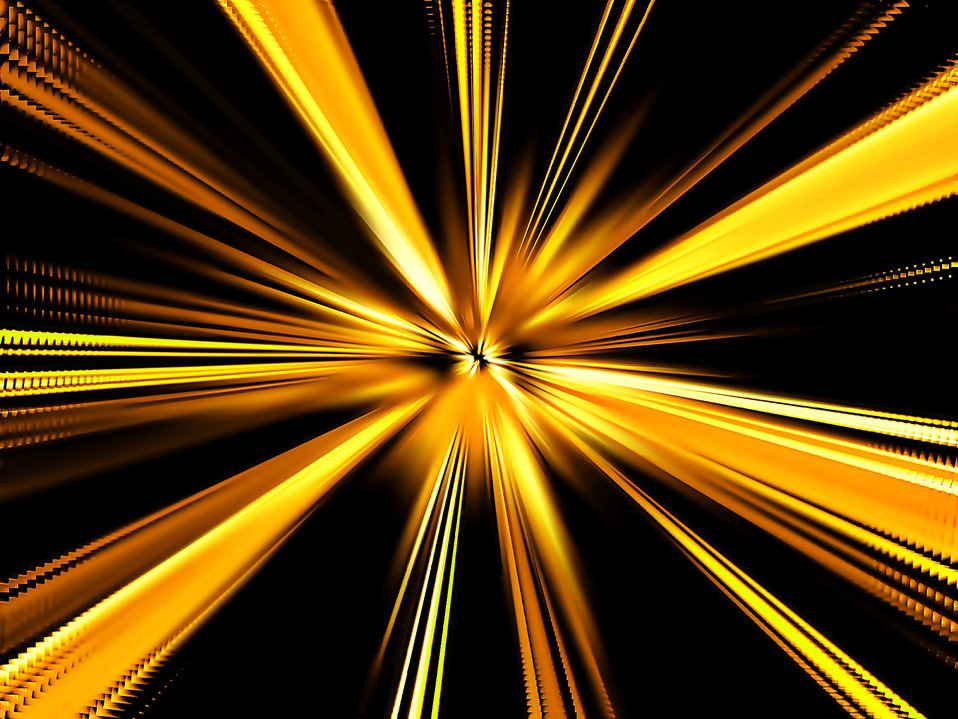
Gold zoom

Background.